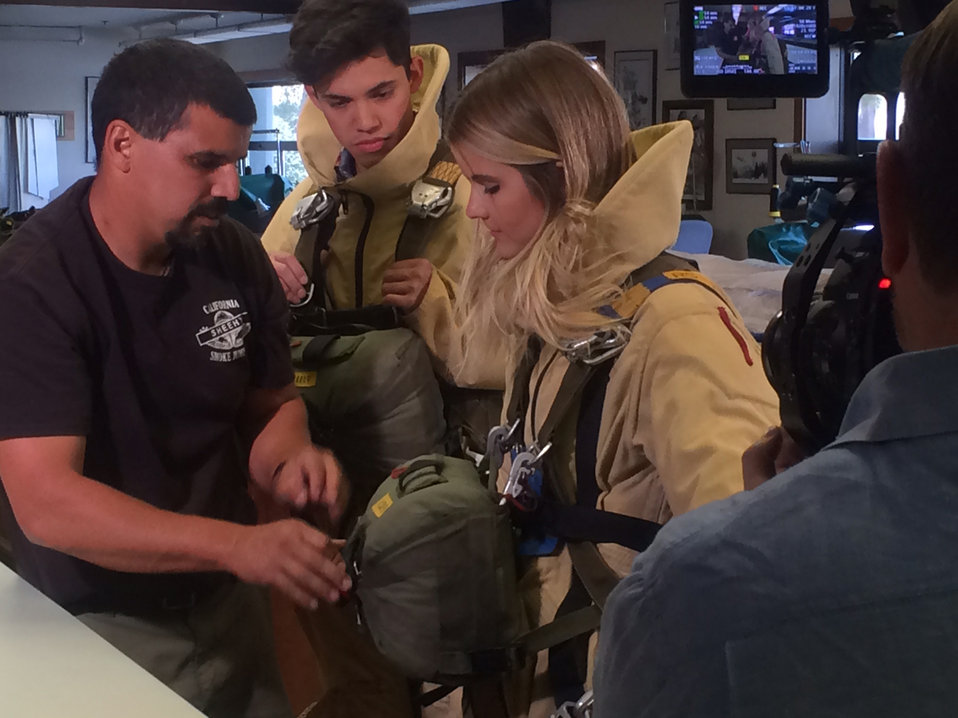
Planes Gomez safety

Luis Gomez runs a safety check to see how well Disney Channel’s “Movie Surfers” Golan Yosef and Taryn Brooks met the mark in their test to suit up in smokejumper gear within two minutes of getting the call to action.